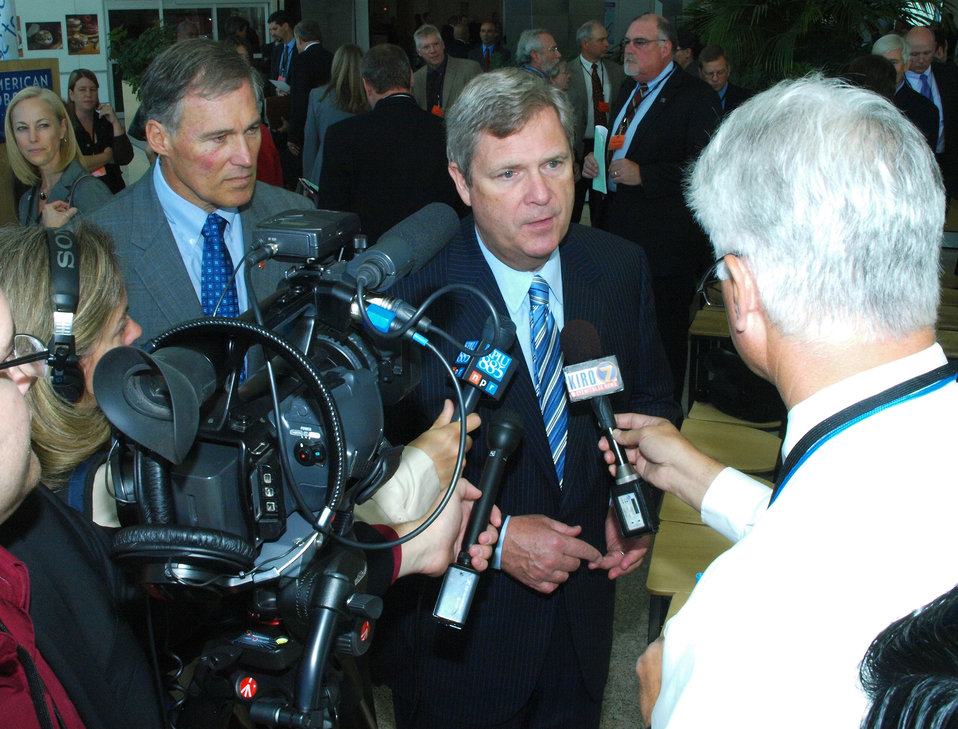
Agriculture Secretary Tom Vilsack meets with the press, after speaking at a White House Business Council event highlighting the American Jobs Act at the airport in Seattle, WA, on Wednesday, September 28, 2011.